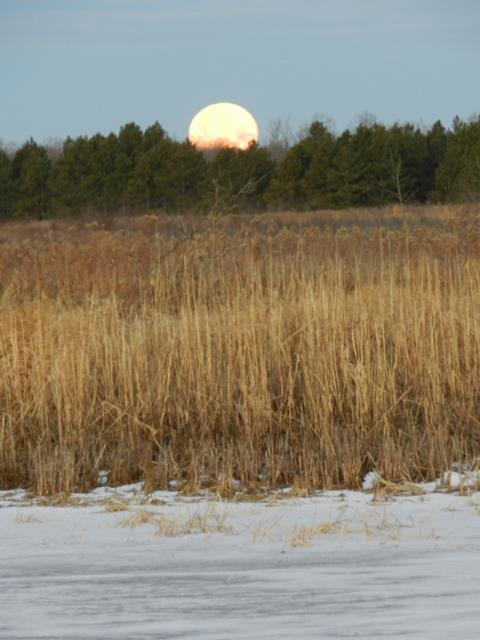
morning moon

Tamarac National Wildlife Refuge, MN
Jan. 11, 2012